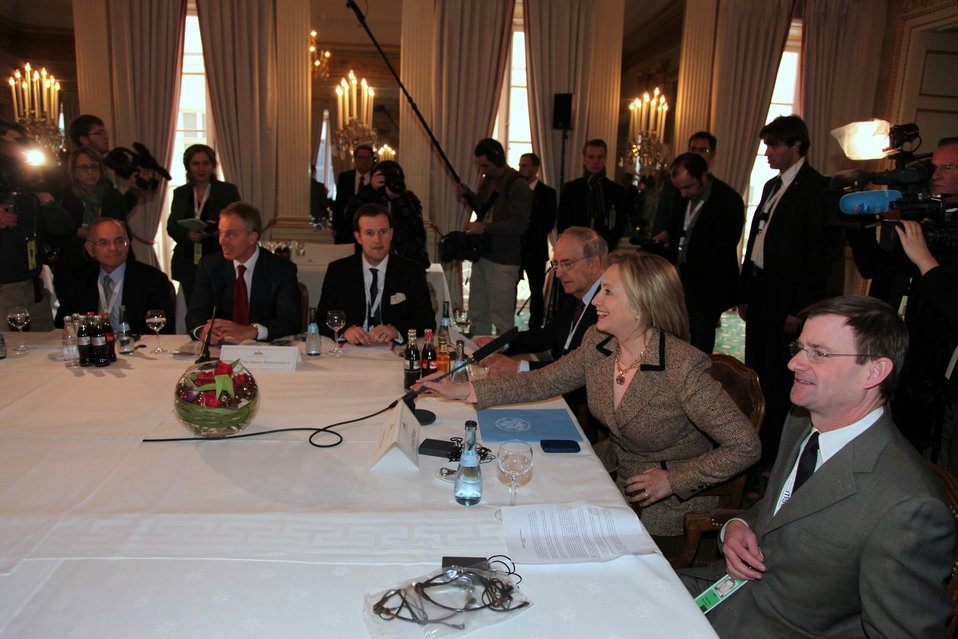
Secretary Clinton, Special Envoy Mitchell, and Quartet Representative Blair Discuss Issues

U.S. Secretary of State Hillary Rodham Clinton, Special Envoy for Middle East Peace, right of the Secretary, and Quartet Representative Tony Blair discuss issues during a Quartet meeting in Munich, Germany, on February 5, 2011.